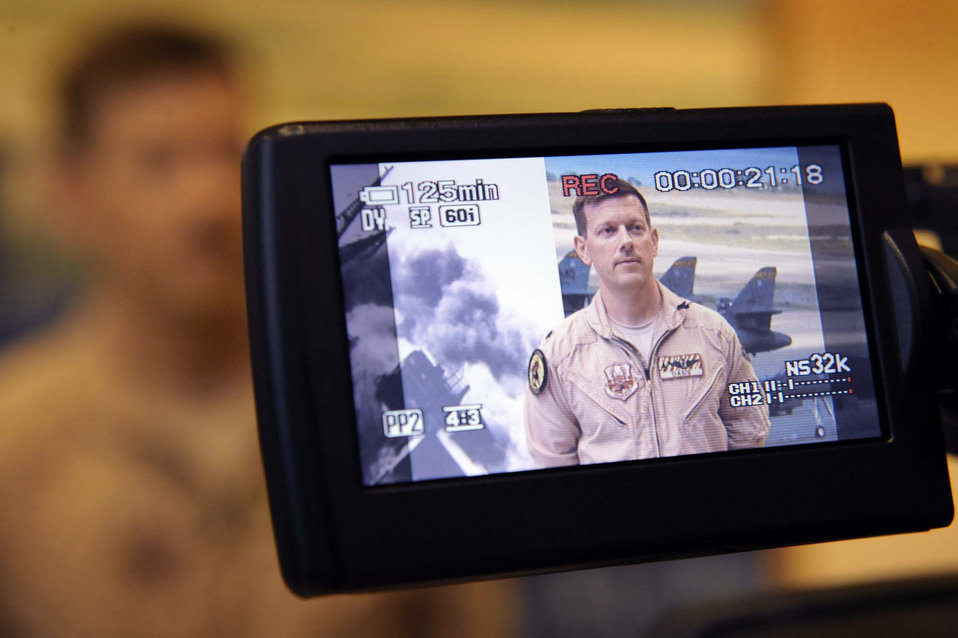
Airmen deploy to Southwest Asia

The 37th Bomb Squadron director of operations is interviewed recently before deploying from Ellsworth Air Force Base, S.D. Airmen representing various specialties deployed in support of operations at the 379th Air Expeditionary Wing in Southwest Asia.